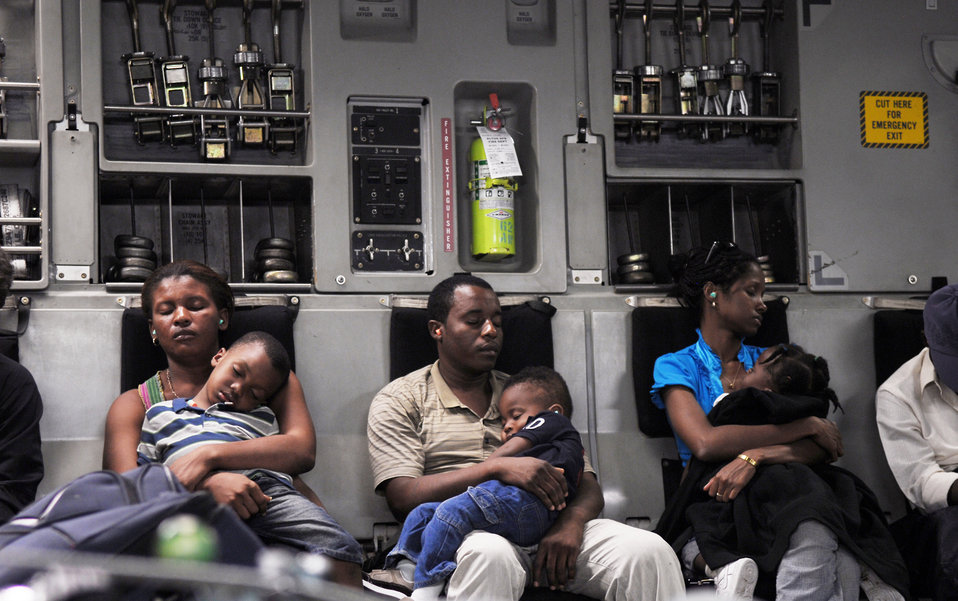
AMC provides airlift for Americans in Haiti

Families sleep aboard a C-17 Globemaster III on their way to Orlando, Fla., Jan. 19, 2010. After dropping off nearly 100 Haitian-Americans, the aircraft returned to Pope Air Force Base, N.C., before swapping out aircrews and continuing the air transportation mission all over again.